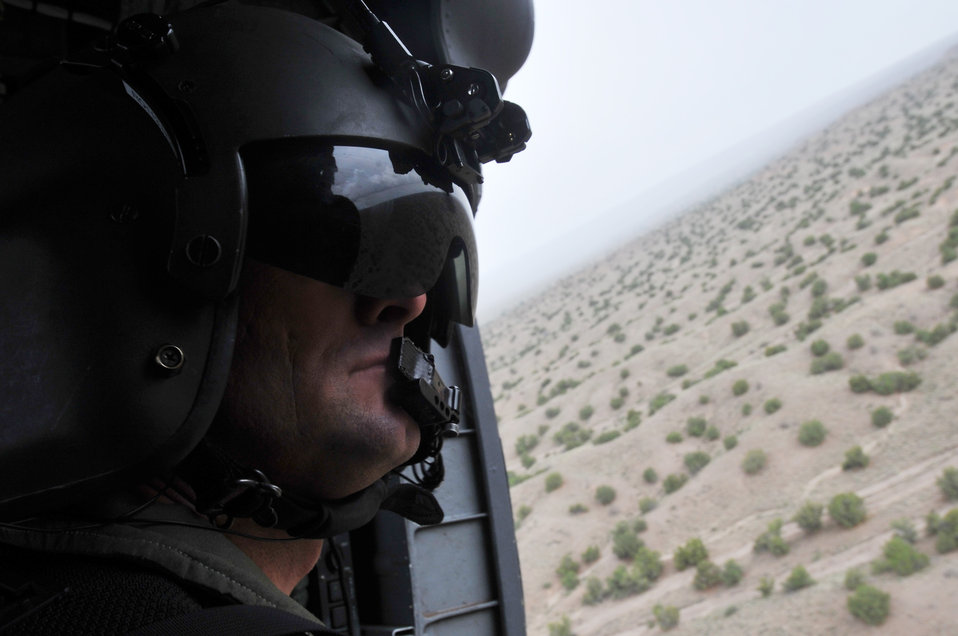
Helicopter crews train at Kirtland AFB

Master Sgt. Cory Norman scans his sector during a training flight on a HH-60G Pave Hawk Aug. 25, 2009, near Kirtland Air Force Base, N.M. Sergeant Norman is an instructor flight engineer assigned to the 512th Rescue Squadron at Kirtland AFB.